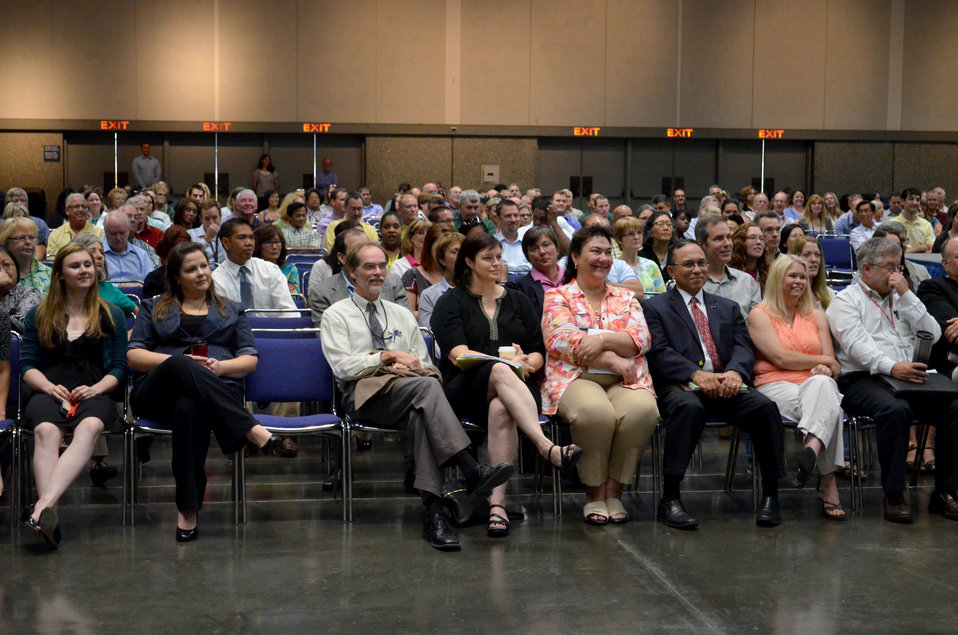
District staff attend town hall meeting

130716-A-QE256-014 – U.S. Army Corps of Engineers Sacramento District staff listen to Col. Michael J. Farrell, the district’s new commander, during his first town hall meeting July 16, 2013 in Sacramento, Calif. Farrell spoke about his experience with the Corps of Engineers and explained the direction he wants to see the district go during his time in command.